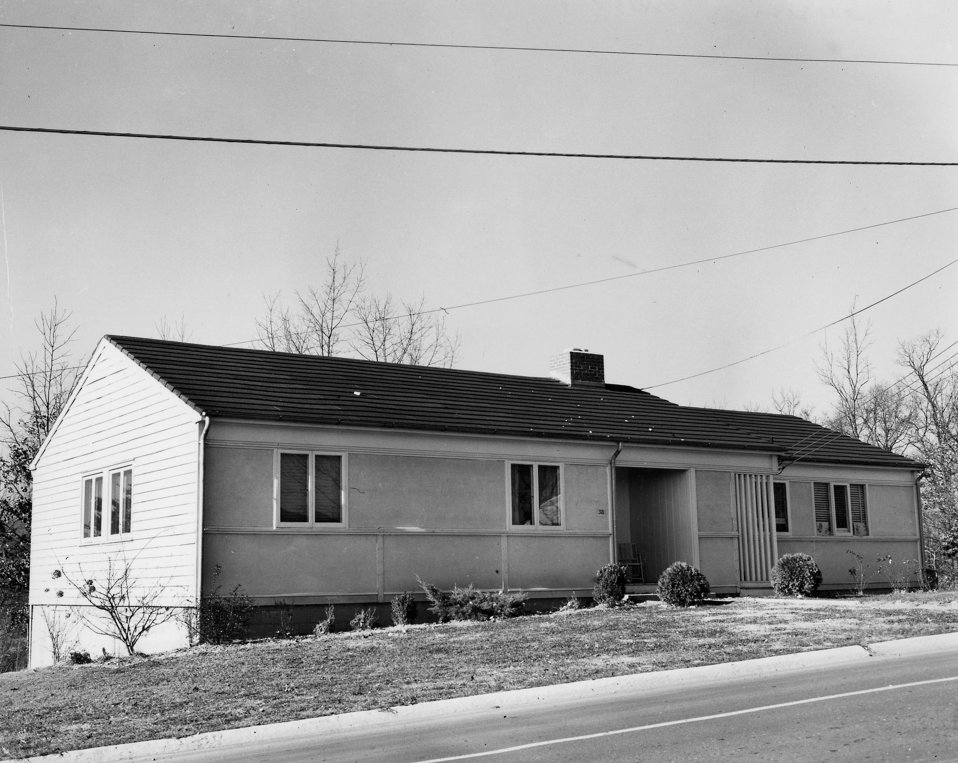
D House Oak Ridge

DOE photo by Ed Westcott

Housing (Cemesto) Oak Ridge Tennessee 1940s